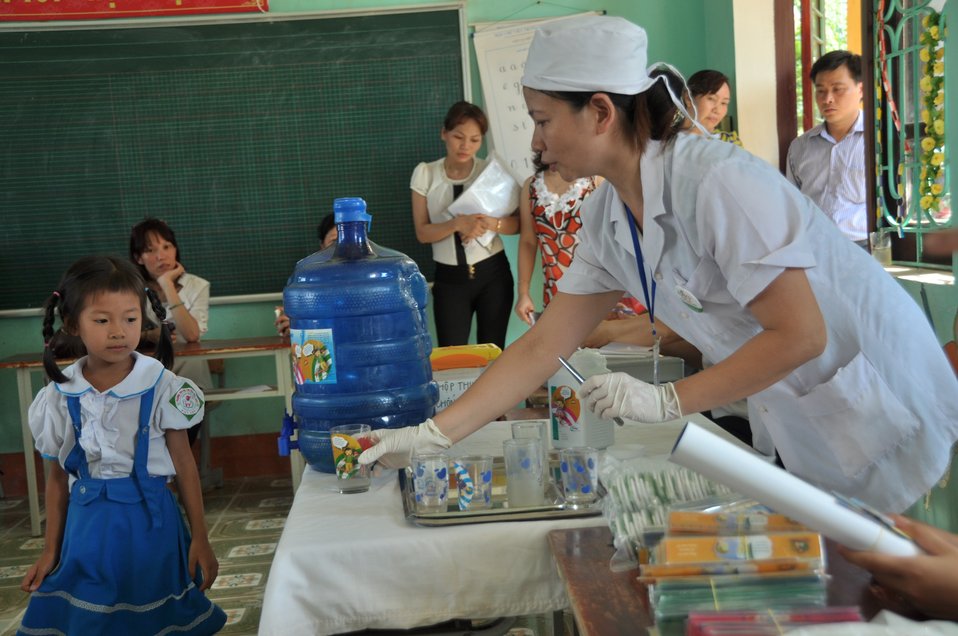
USAID supports deworming education and medication distribution in Bac Giang Province

May 20, 2013